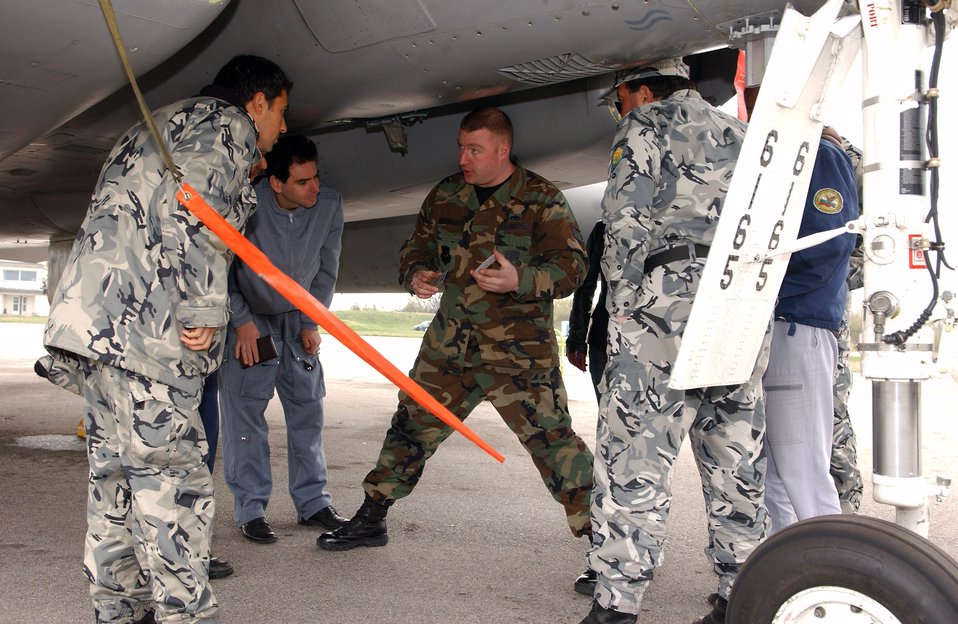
Program benefits American, Bulgarian maintainers

Staff Sgt. Robert Jackson explains the process of purchasing fuel in a NATO country in order to refuel an F-15 Eagle to a group of Bulgarian air force crew chiefs April 2 at Graf Ignatievo Air Base, Bulgaria. Sergeant Jackson is an F-15 crew chief participating in a familiarization program while deployed for Operation Noble Endeavor.